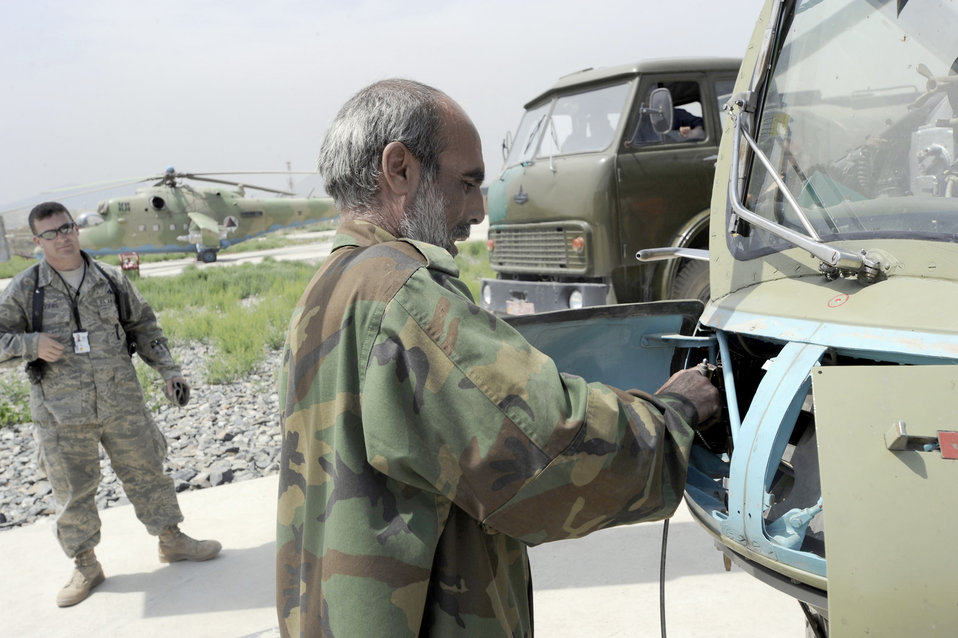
Armament adviser

Master Sgt. Raymond Rogers Jr. watches as Aghan National Army Air Corps Lt. Amin Ullah cleans out the bullet chamber of a Yak-B Gatling gun on an MI-35 Hind E attack helicopter after a training mission May 15, 2010, at Kabul International Airport, Afghanistan. Sergeant Rogers is a 438th Air Expeditionary Advisory Squadron armament and ammunition flight adviser and Lieutenant Ullah is a weapons loader.